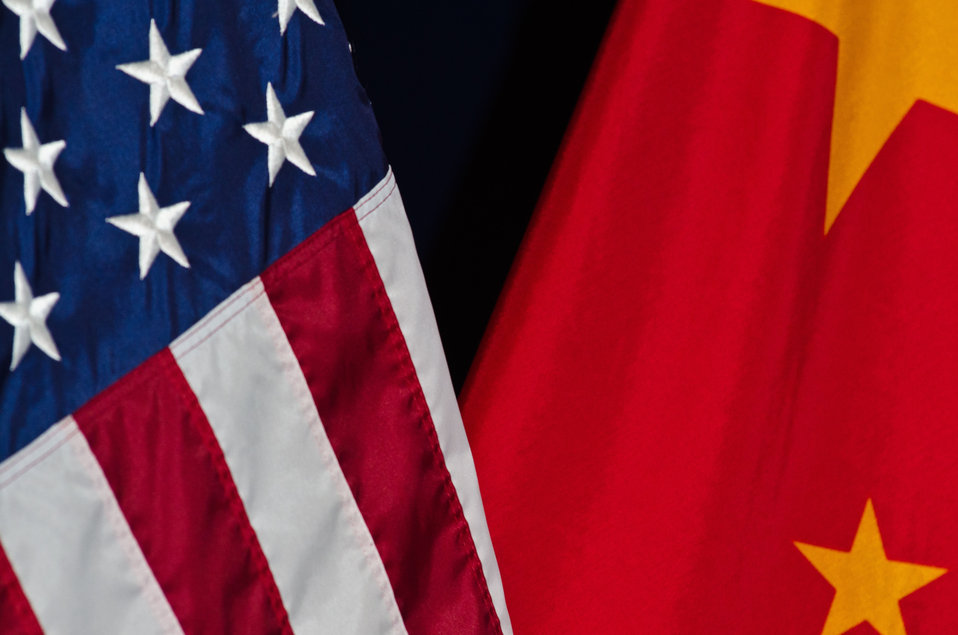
U.S. and China flags at the 23rd Session of the U.S. China Joint Commission on Commerce and Trade (JCCT) press conference, at the Andrew W. Mellon Auditorium in Washington, D.C. on Wednesday, Dec. 19, 2012. The JCCT holds high-level plenary meetings on an annual basis to review progress made by working groups that focus on a wide variety of trade issues. These working groups meet throughout the year to address topics such as intellectual property rights, agriculture, pharmaceuticals and medical devices, information technology, tourism, commercial law, environment, and statistics. Established in 1983, the JCCT is the main forum for addressing bilateral trade issues and promoting commercial opportunities between the United States and China. The 2011 JCCT meeting was held in Chengdu, China, where China agreed, among other issues, to improve intellectual property enforcement, delink innovation policies to government procurement preferences, and provide a fair and level playing field in China’s Strategic Emerging Industries.